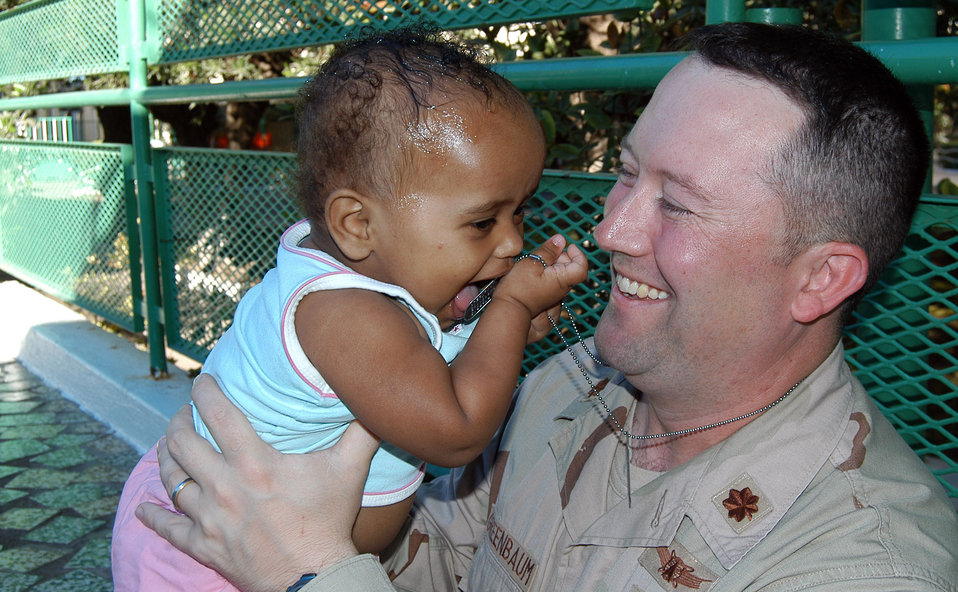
Airmen spend special time with orphans

Maj. Lanny Greenbaum spends time with a baby Jan. 26 at a Djibouti orphanage near Camp Lemonier, Djibouti. Servicemembers supporting the Combined Joint Task Force-Horn of Africa mission donate their time three times a week to help French nuns who run the facility feed the babies at dinner time. More than 60 babies and toddlers are cared for at the facility. Major Greenbaum, a Plain City, Ohio, native, is the CJTF-HOA information management officer.